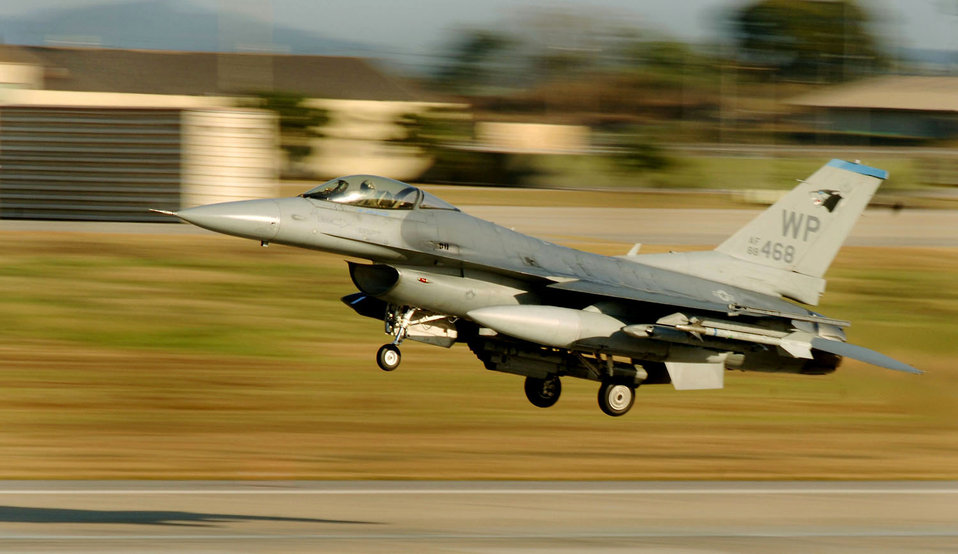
Kunsan Air Base maintains readiness

An F-16 Fighting Falcon takes off from a runway at Kunsan Air Base, South Korea. Aircraft are always at the ready, flying training missions around the clock to ensure total readiness.